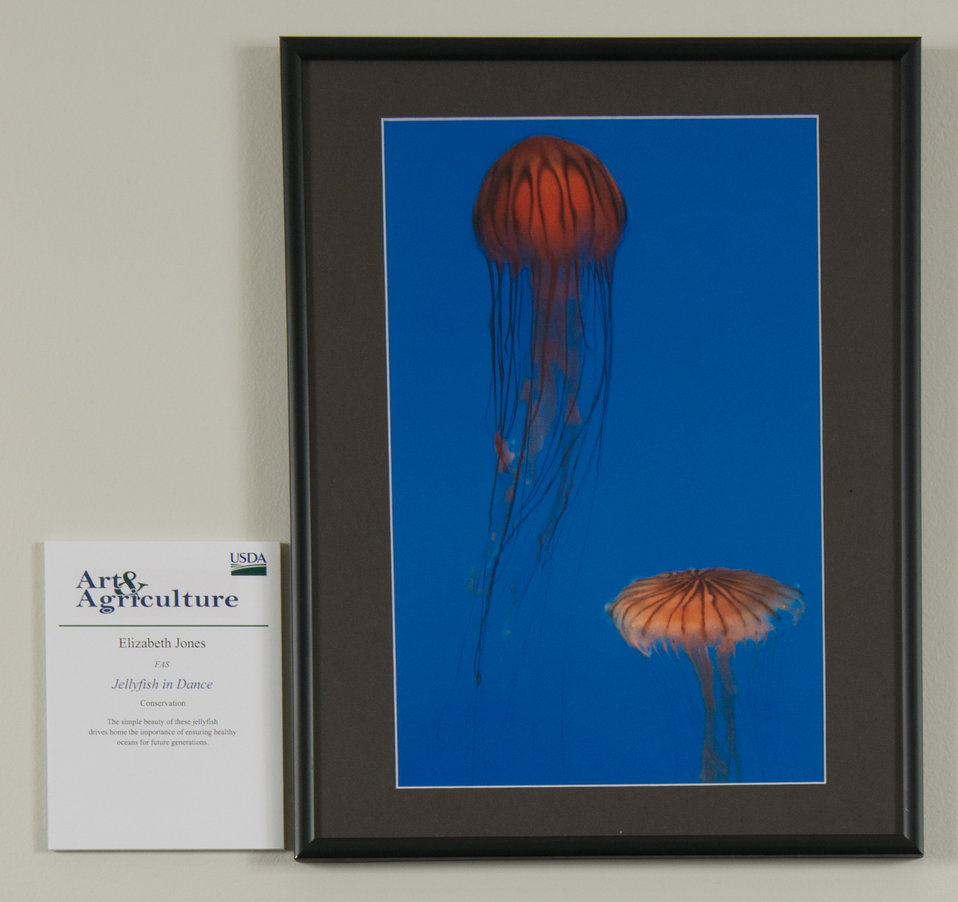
Online Viewer's Choice entries of the 2013 Art & Agriculture, Tuesday, July 9, 2013, in the South Building, Washington, D.C. Themes were expressed by employees from across the department and the contest was open to full-time and part-time USDA employees. Winning artwork will be displayed till the end of the year. U.S. Artistic expression is a creative outlet that is vital for an individual to grow and develop.